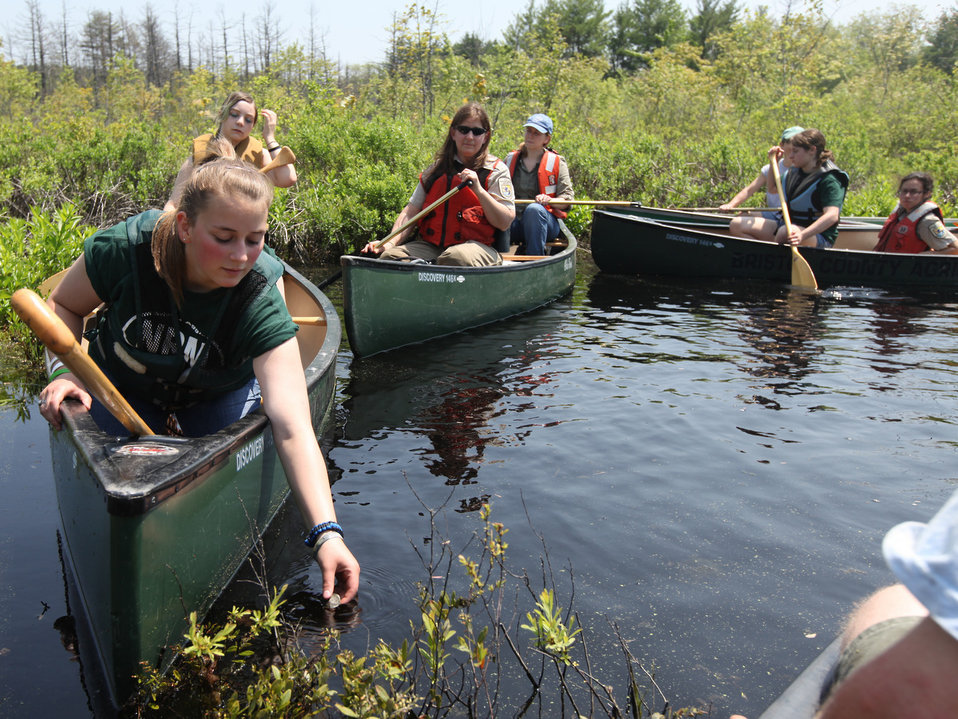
Releasing Blanding's turtles at Assabet River National Wildlife Refuge.